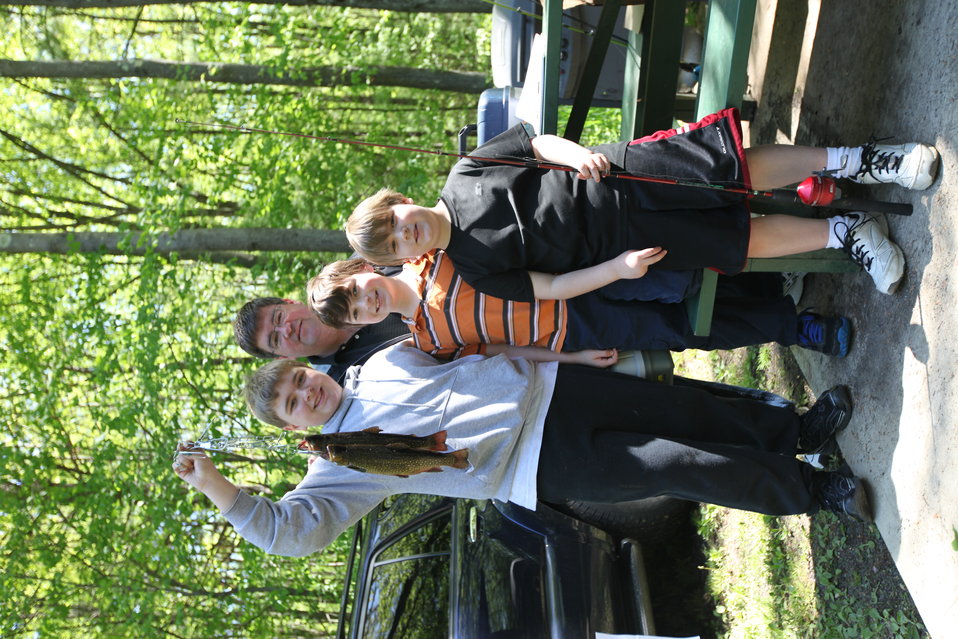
Youth Fishing Derby 2012

Megan Nagel/USFWS